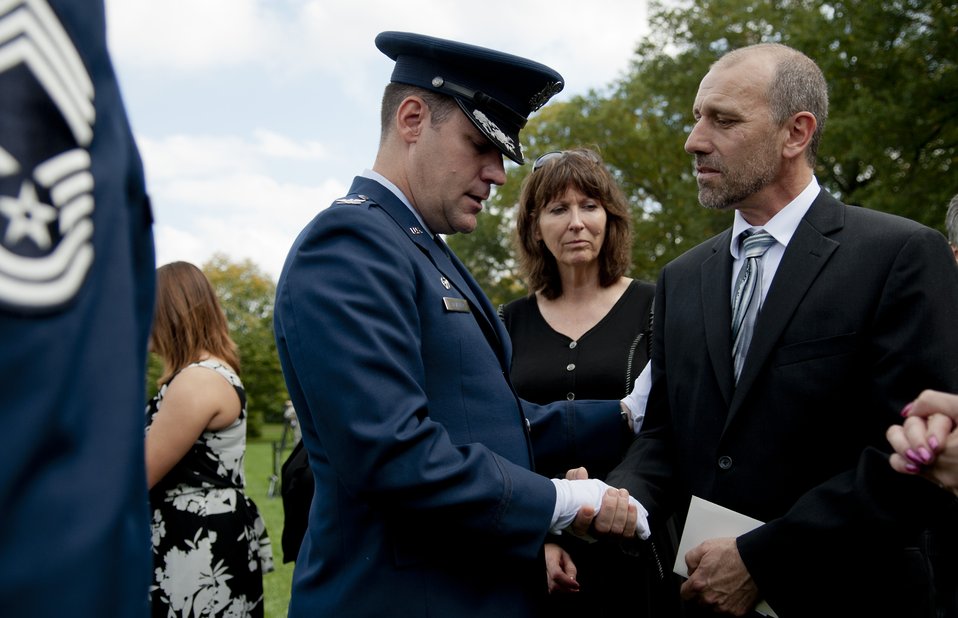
Full military honors

Col. John Devillier, Air Force Mortuary Affairs, Commander, provides his condolences to Mr. Greg Mille, son to Col. Wendell Keller, after Mr. Miller's father's official funeral at the Arlington National Cemetery Oct. 20, 2012. March 1, 1969, Col. Wendell Keller and Capt. Virgil Meroney were the crew of an F-4D Phantom II aircraft that went down while carrying out a night time strike mission in Khammouan Province, Laos. Nearby aircrews reported seeing the aircraft hit by enemy fire. No parachutes were seen after the aircraft was hit. Heavy enemy presence in the area prevented recovery efforts. Between 1994 to 2011, the